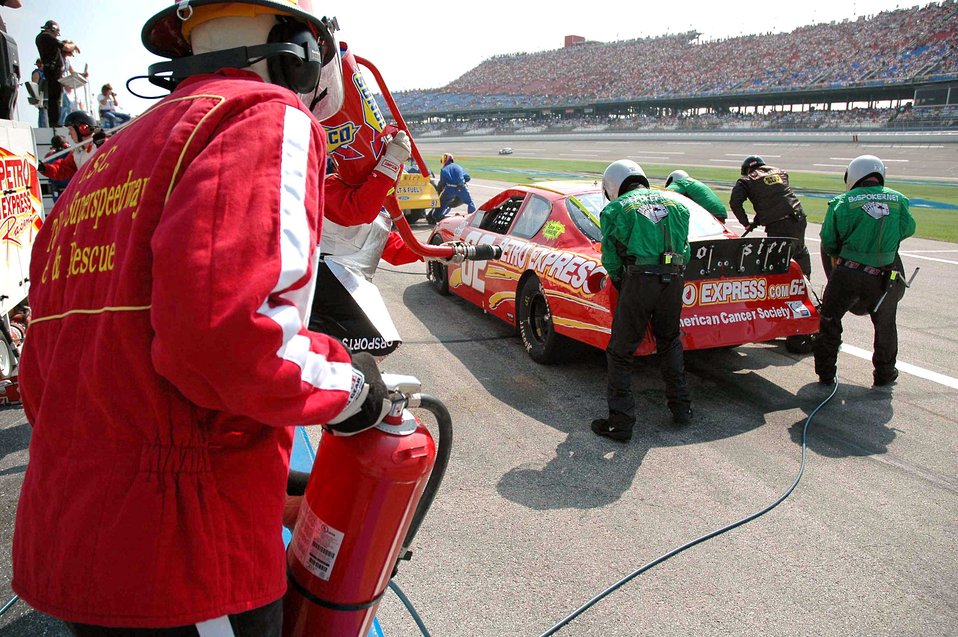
Eglin firemen keep NASCAR teams safe

TALLADEGA, Ala. -- J.R. Sudarth watches over the Wood Brothers Racing Team as they conduct a 10-second pit stop on the No. 21 Air Force-sponsored NASCAR. The care was recently driven by Ricky Rudd at the Talladega Superspeedway on Oct. 2. Mr. Sudarth and three other firefighters from Eglin Air Force Base, Fla., were among a group of firefighters who work part-time each spring and fall at Talladega NASCAR races to make sure the drivers and race teams are safe.